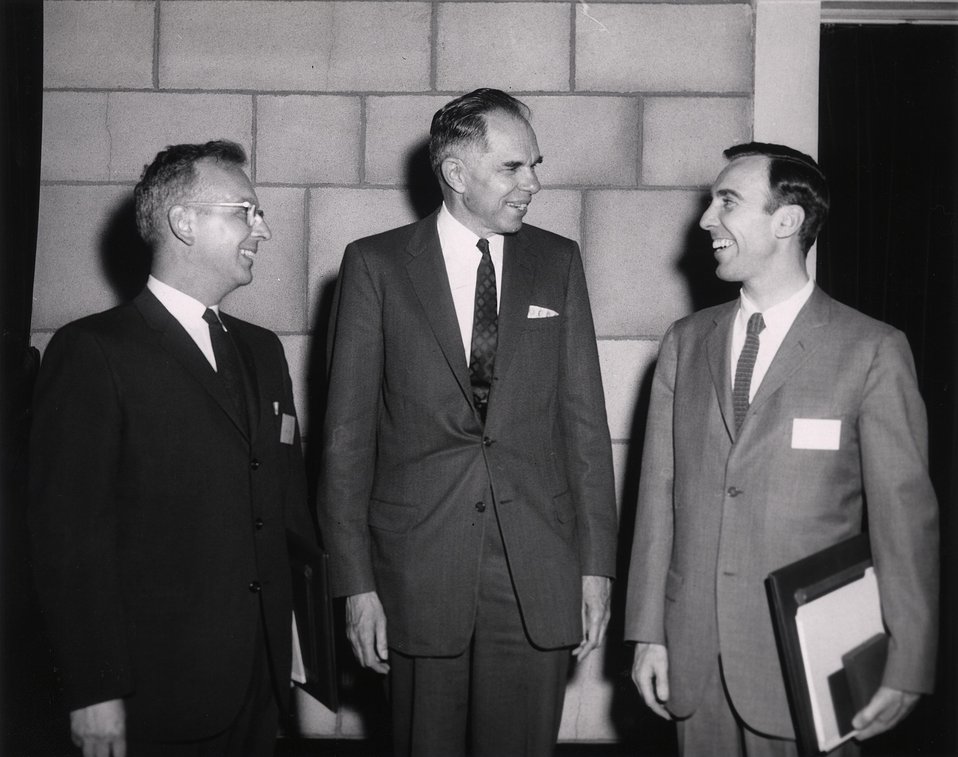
E. O . Lawrence Award Ceremony. National Academy of Sciences. April 29, 1965. Mr. Culler, Dr. Seaborg, Dr. Upton.